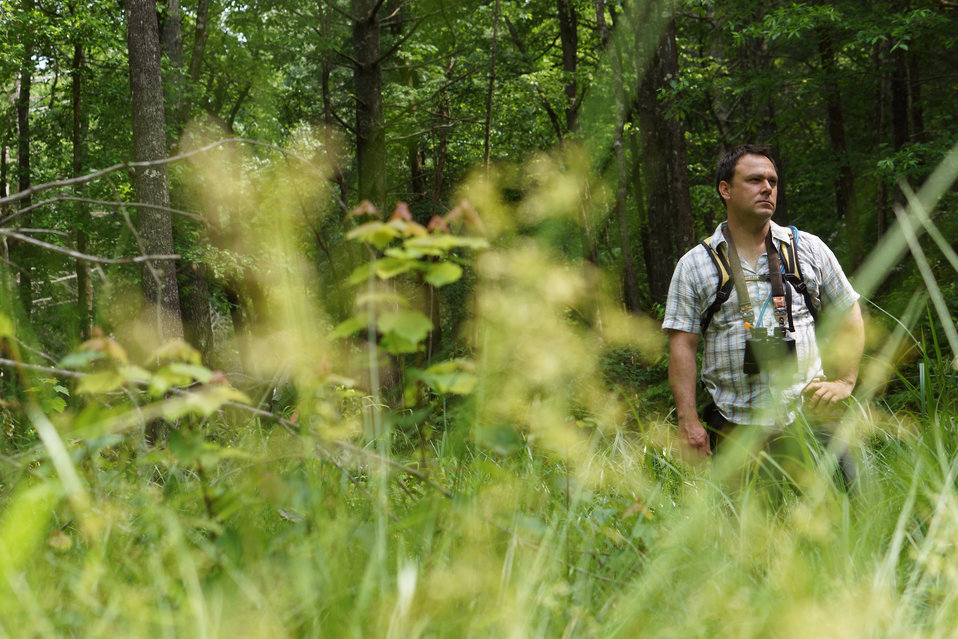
Adam Warwick

In May, bog conservationists from Tennessee, North Carolina, and Georgia convened in the north Georgia mountains for the spring, 2014 meeting of the Bog Learning Network. The event provided an opportunity for biologists to see, first hand, the result of management efforts at two north Georgia bogs. More importantly, the outings provided an opportunity to share innovative approaches to bog management, such as the role of the Georgia Plant Conservation Alliance in conserving rare plants and coordinating a cadre of volunteers to work on bog management.

The Bog Learning Network was convened in the winter of 2013 as a way to bring together people working for bog conservation across the Southern Appalachians. Southern Appalachian bogs are one of North America’s rarest habitats and home to many rare plants and animals.